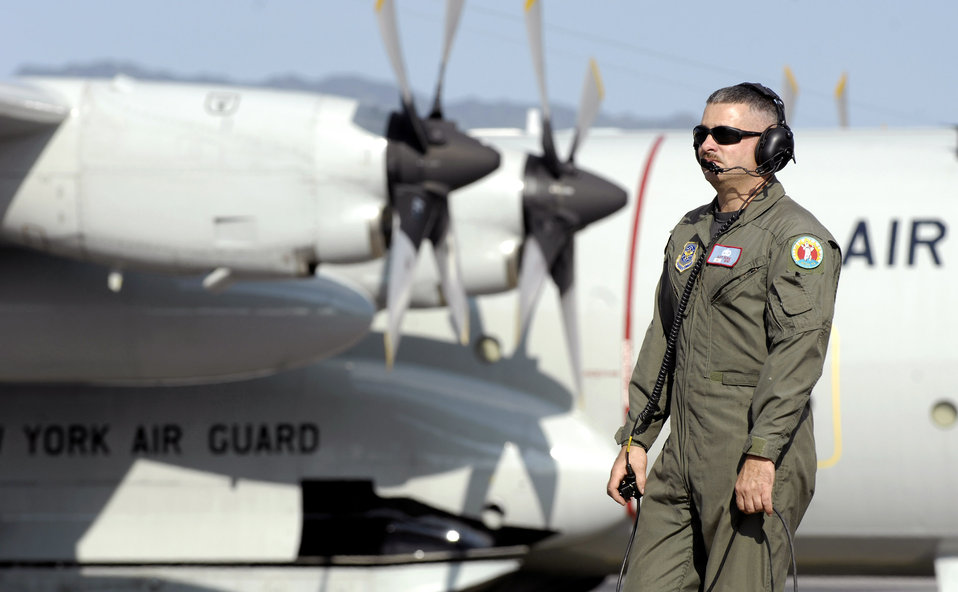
C-130s depart for 'Ice'

Master Sgt. Cliff Devoe conducts an engine start-up check on an LC-130 Hercules aircraft Oct. 17. Ski-equipped, crews and support personnel from the New York Air National Guard's 109th Airlift Wing are transiting Hickam Air Force Base, Hawaii, and deploying to McMurdo Station, Antarctica, to support the 13th Operation Deep Freeze, an Air Force-led Joint Task Force Support Forces Antarctica mission.